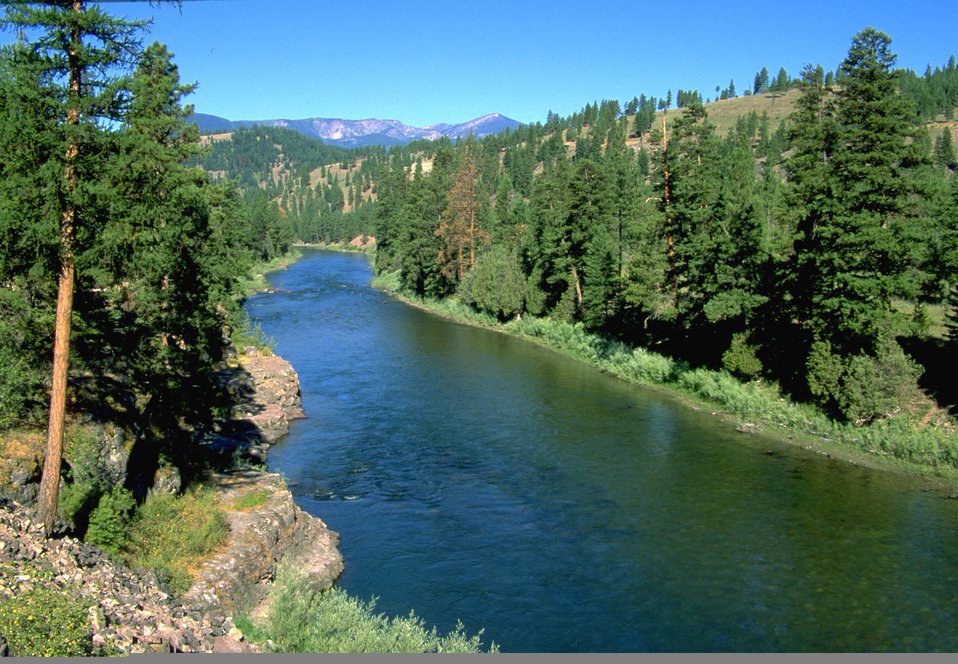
Clarks Fork River